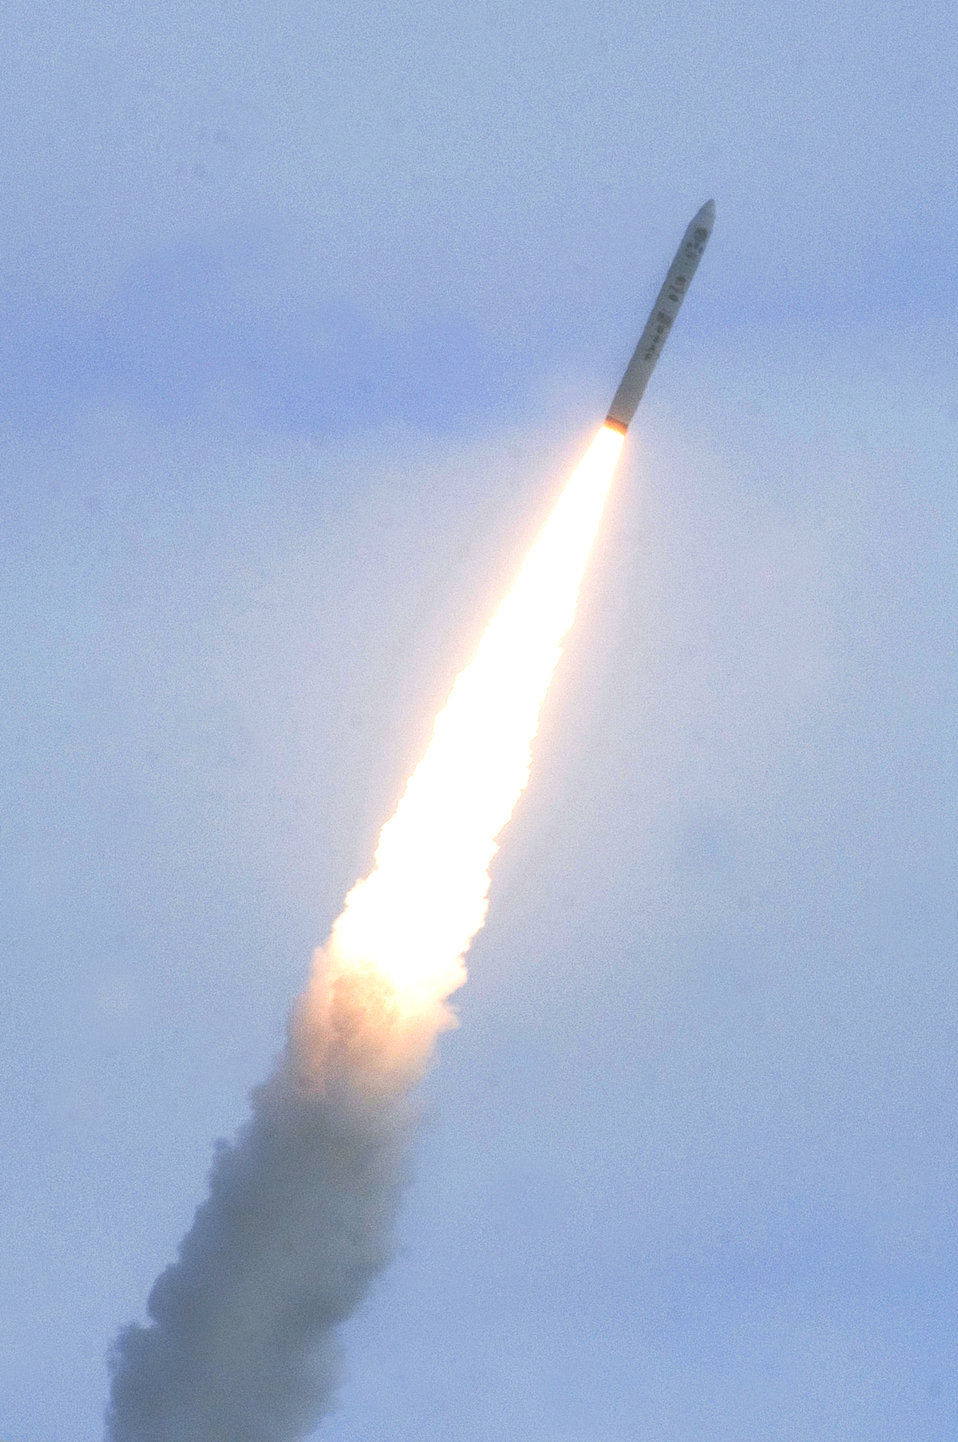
First Minotaur IV Lite launches from Vandenberg

Vandenberg Air Force Base officials launch the first Minotaur IV Lite launch vehicle at 4 p.m. April 22, 2010,at Vandenberg AFB, Calif.